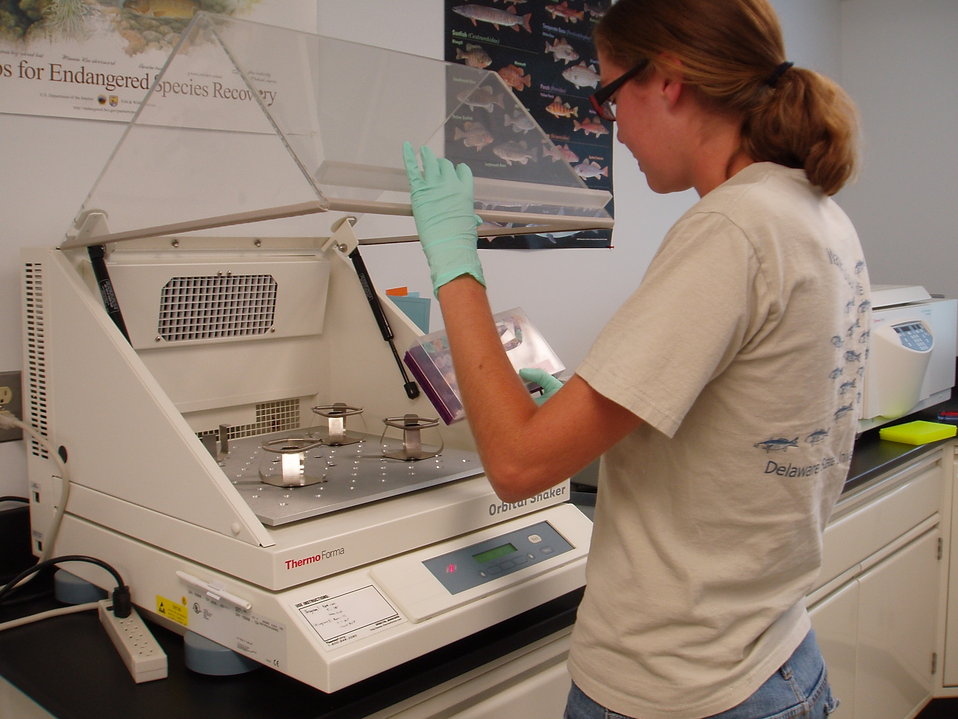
Working in the genetics lab at the Northeast Fishery Center.